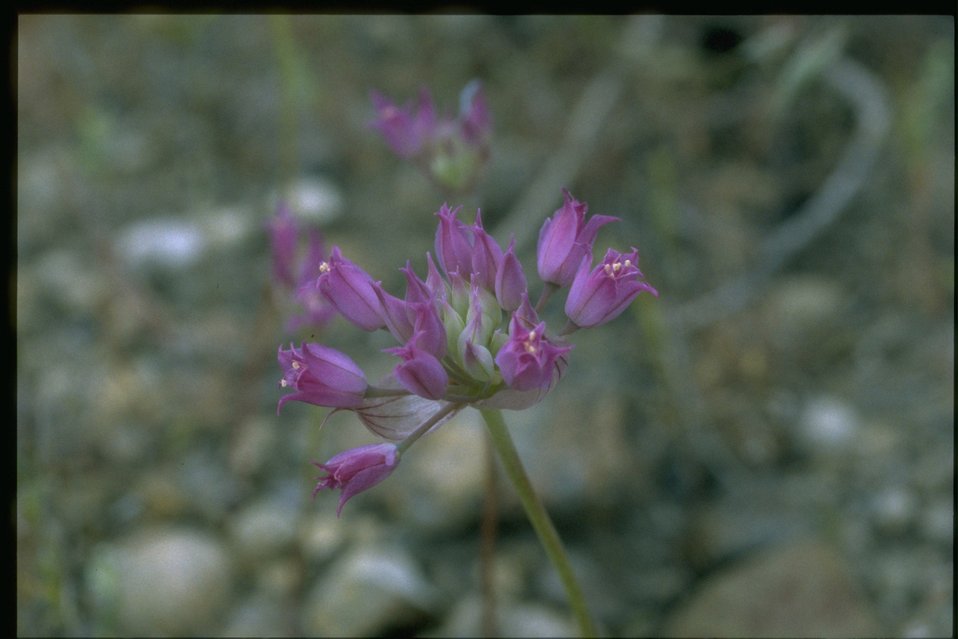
Closeup of wild Onion blossom.